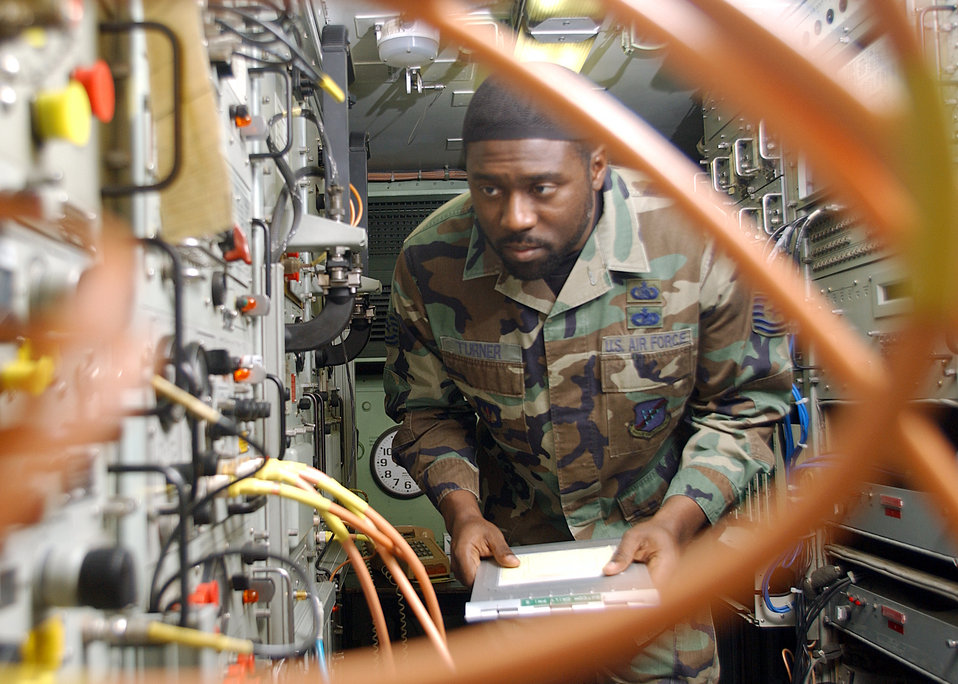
Inspecting equipment

INCIRLIK AIR BASE, Turkey -- Tech. Sgt. Glynis Turner inspects satellite communication equipment here. During his free time, he is the Islamic lay leader for the base chapel which welcomes all religions. Turner is a quality assurance evaluator with the 39th Communications Squadron.